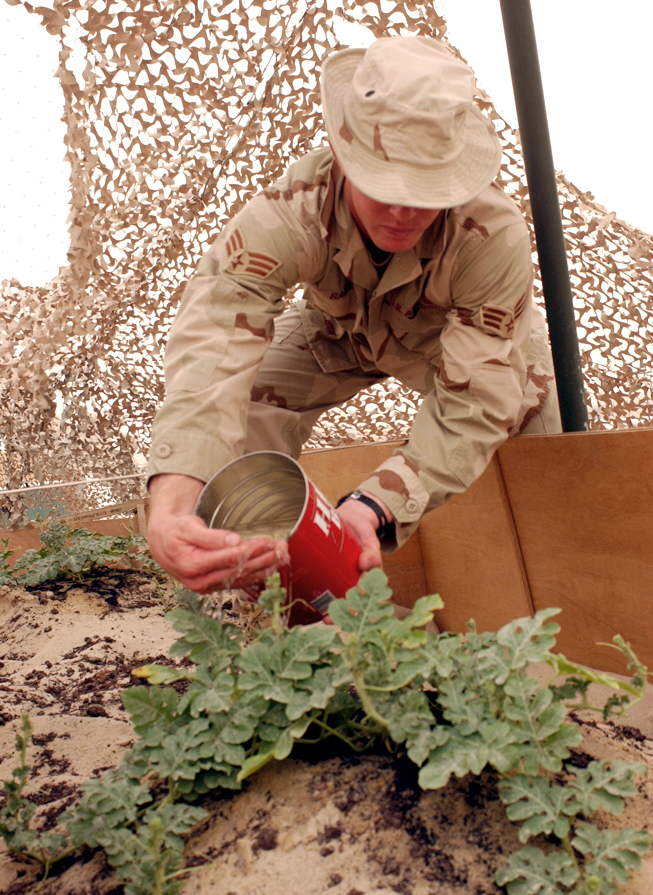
Green thumb

OPERATION IRAQI FREEDOM (AFPN) -- Senior Airman Dusty Bailey waters his watermelon plants at a forward-deployed location in Southwest Asia. Bailey is assigned to the 379th Precision Measurement Equipment Laboratory.